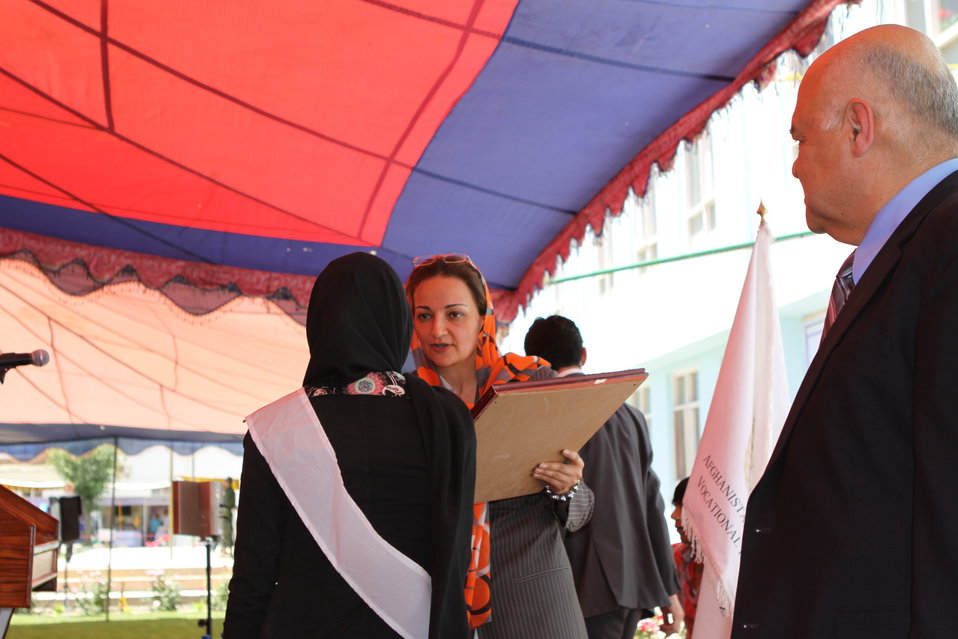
100522 ATVI Graduation 125